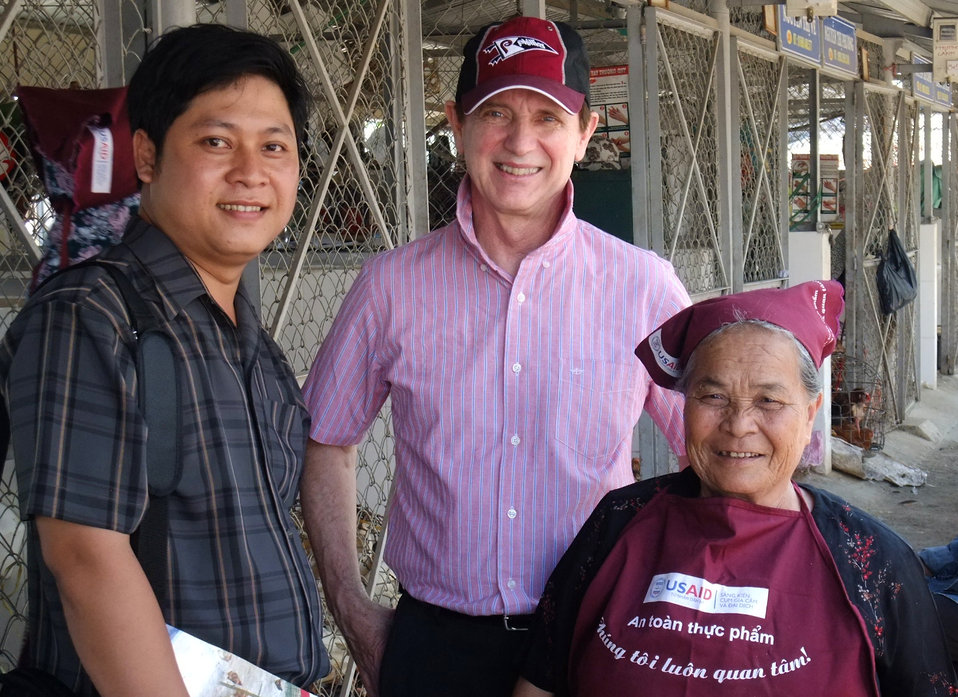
USAID Mission Director Francis Donovan visits Dong Ha Poultry Market